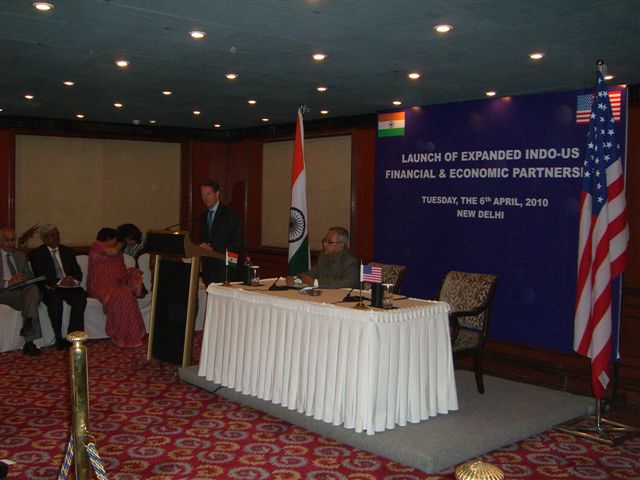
Secretary Geithner in India, 4/6/10

On April 6, 2010, Secretary Geithner and Indian Finance Minister Mukherjee held a joint press conference following the launch of the U.S.-India Economic and Financial Partnership at the Taj Palace Hotel in Delhi, India.